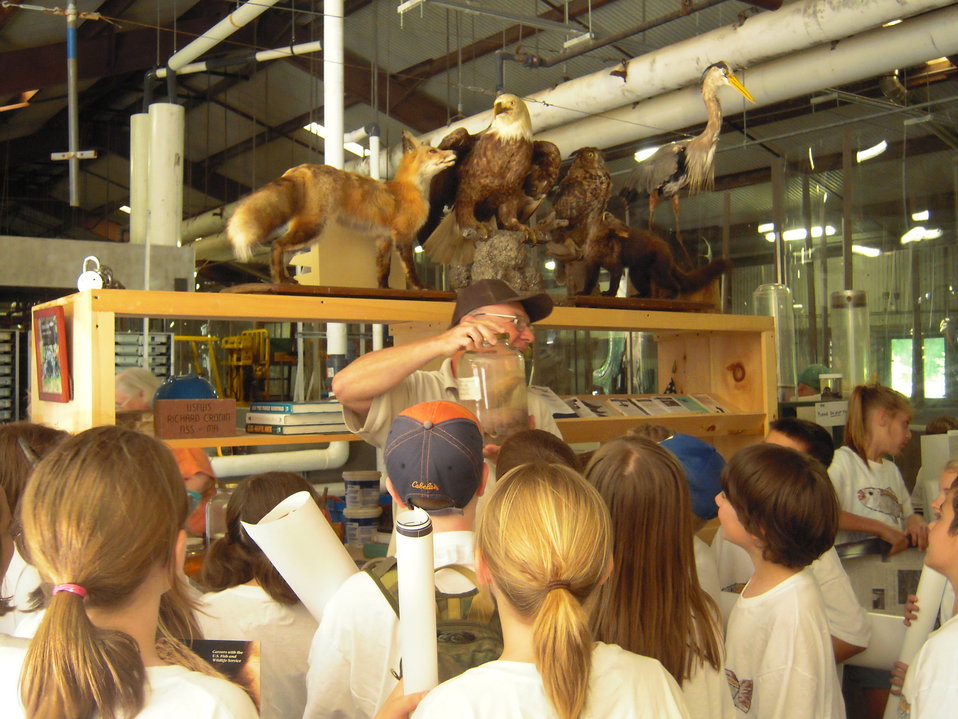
Showing egg jars and animal species